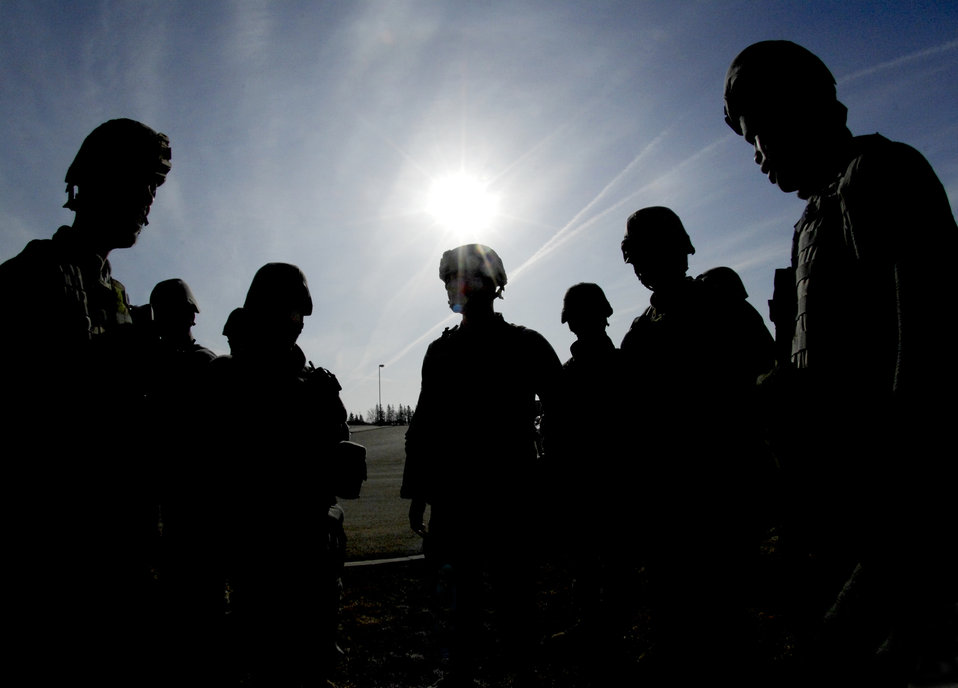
Shooter, sirens prep Minot Airmen

Members of the 5th Security Forces Squadron assemble prior to entering the McAdoo Fitness Center in response to the major accident response exercise March 26, 2010, at Minot Air Force Base, N.D. The exercise prepared base members for possible real-world situations as well as testing communication and emergency procedures.